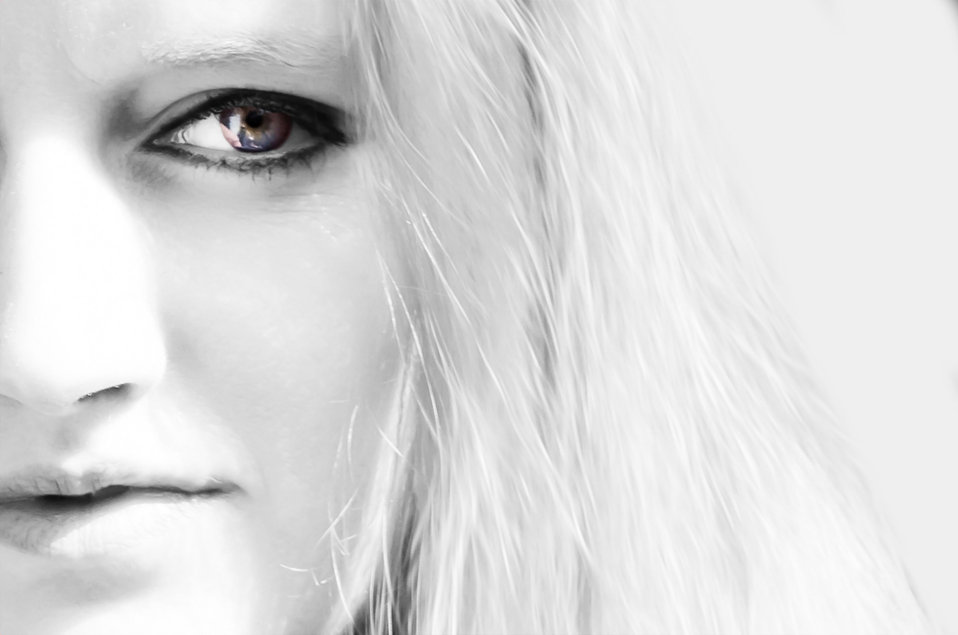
Woman - light effects.